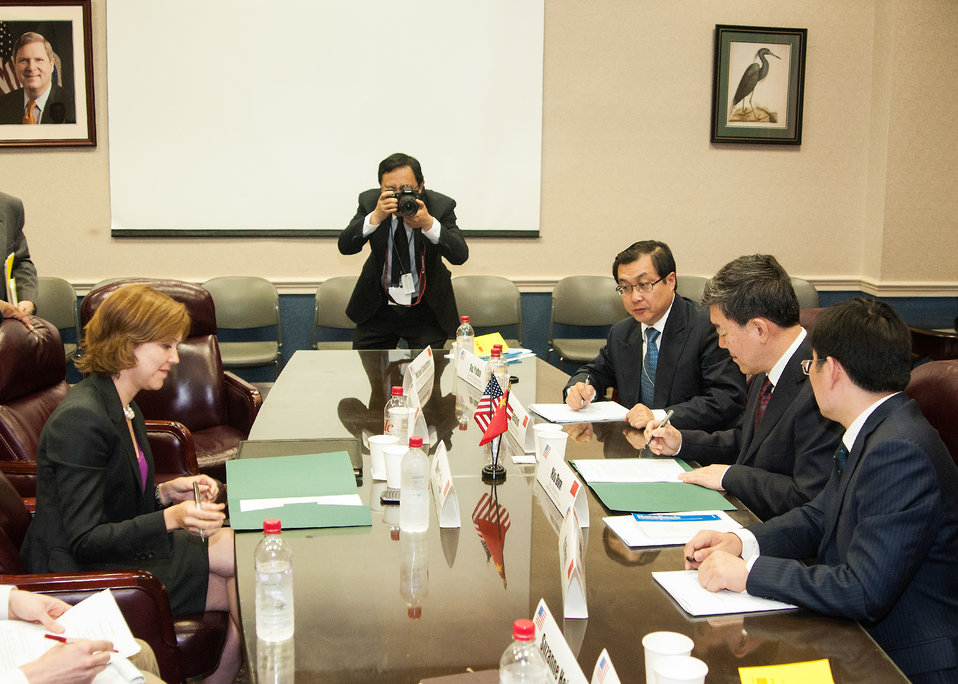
U.S. Department of Agriculture (USDA) Acting Under Secretary, Farm and Foreign Agricultural Services(FFAS) Darci Vetter (left) and Vice Minister, Minister of Agriculture, People’s Republic of China Niu Dun (right) sign the U.S. China Joint Committee on Cooperation in Agriculture (JCCA) at USDA in Washington, D.C. on Tuesday, Jun. 9, 2013.